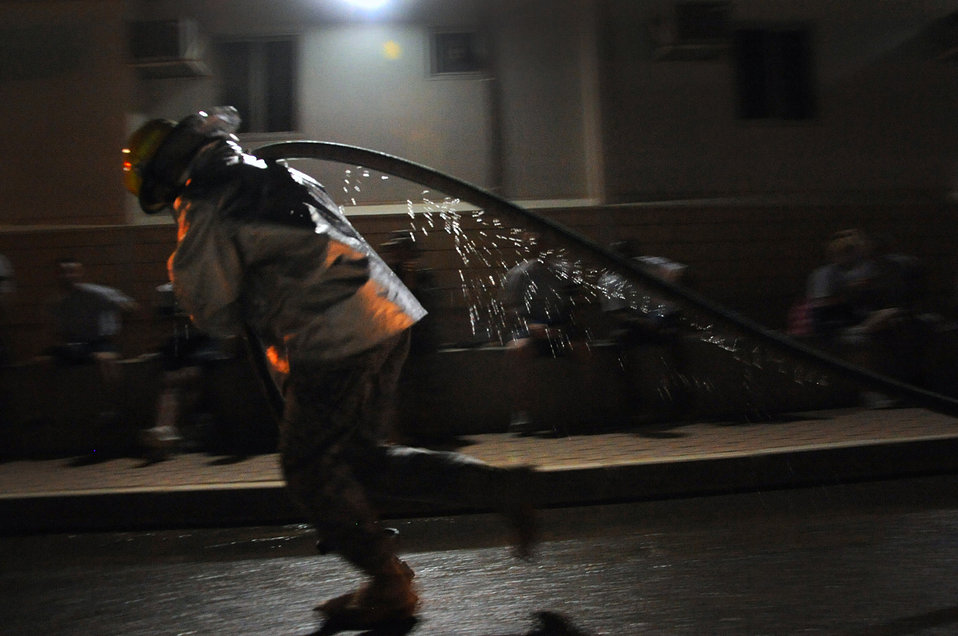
Firefighter challenge

An Air Force firefighter competes in the hose advance event May 28, 2011, during a firefighter challenge in Southwest Asia. The challenge featured multiple events, including tool carry, equipment hoist, dummy carry, hose advance, tire strike and hose pack carry.